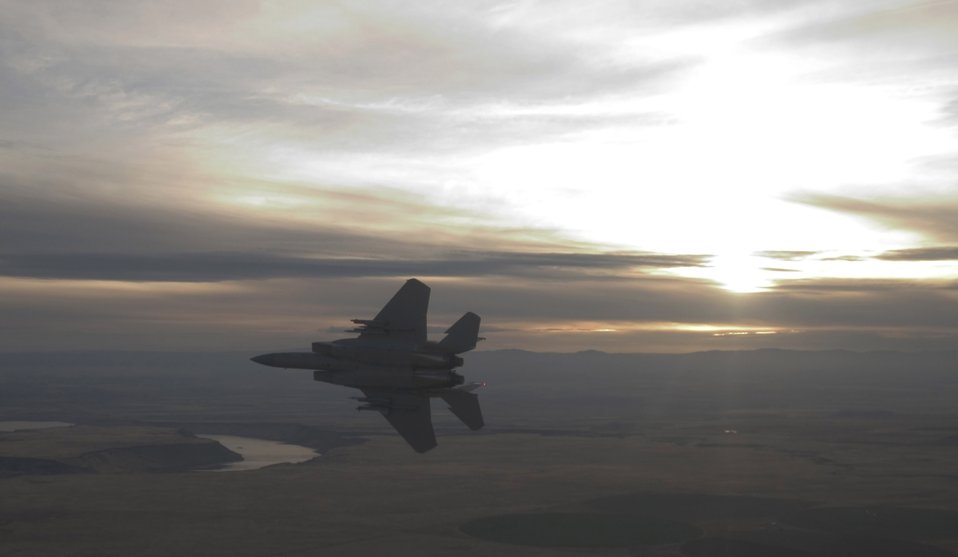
Flying over Idaho

An F-15 Eagle from the 366th Fighter Wing pitches out for landing over Mountain Home Air Force Base, Idaho, Nov. 1. The 366th Fighter Wing began the first phase of its F-16 Fighting Falcon drawdown when five jets departed the base Nov. 2. The departure is part of the wing's realignment from an F-16, F-15C and F-15E base to an all F-15E Strike Eagle installation by 2011. The move, outlined in the 2005 Base Realignment and Closure recommendation, is also part of the Air Force initiative to become a smarter and leaner force by consolidating its F-15 and F-16 fighter aircraft.